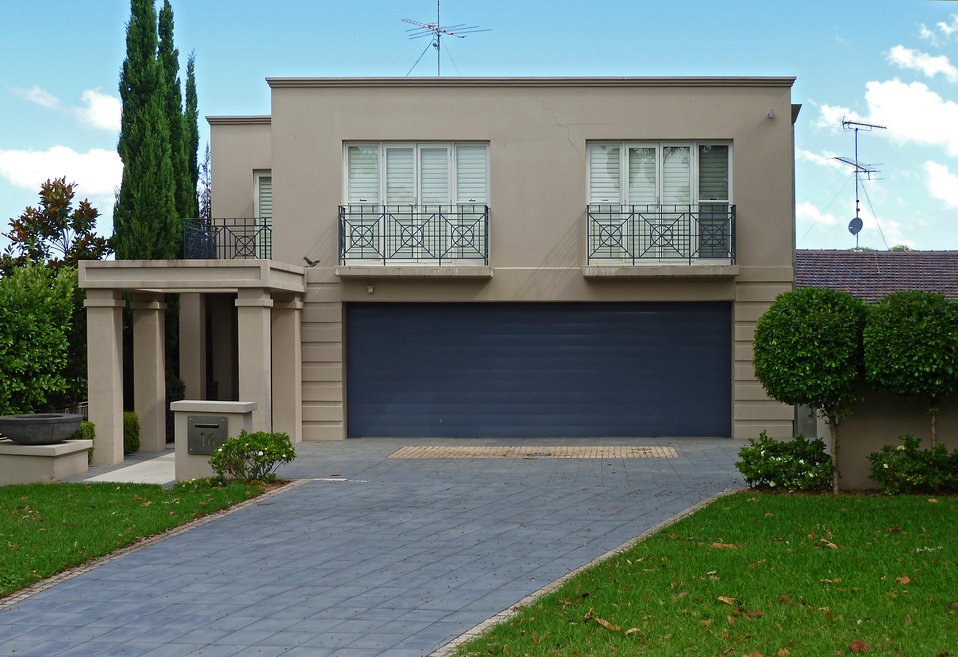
16 Gold Street, Blakehurst, New South Wales, Australia.